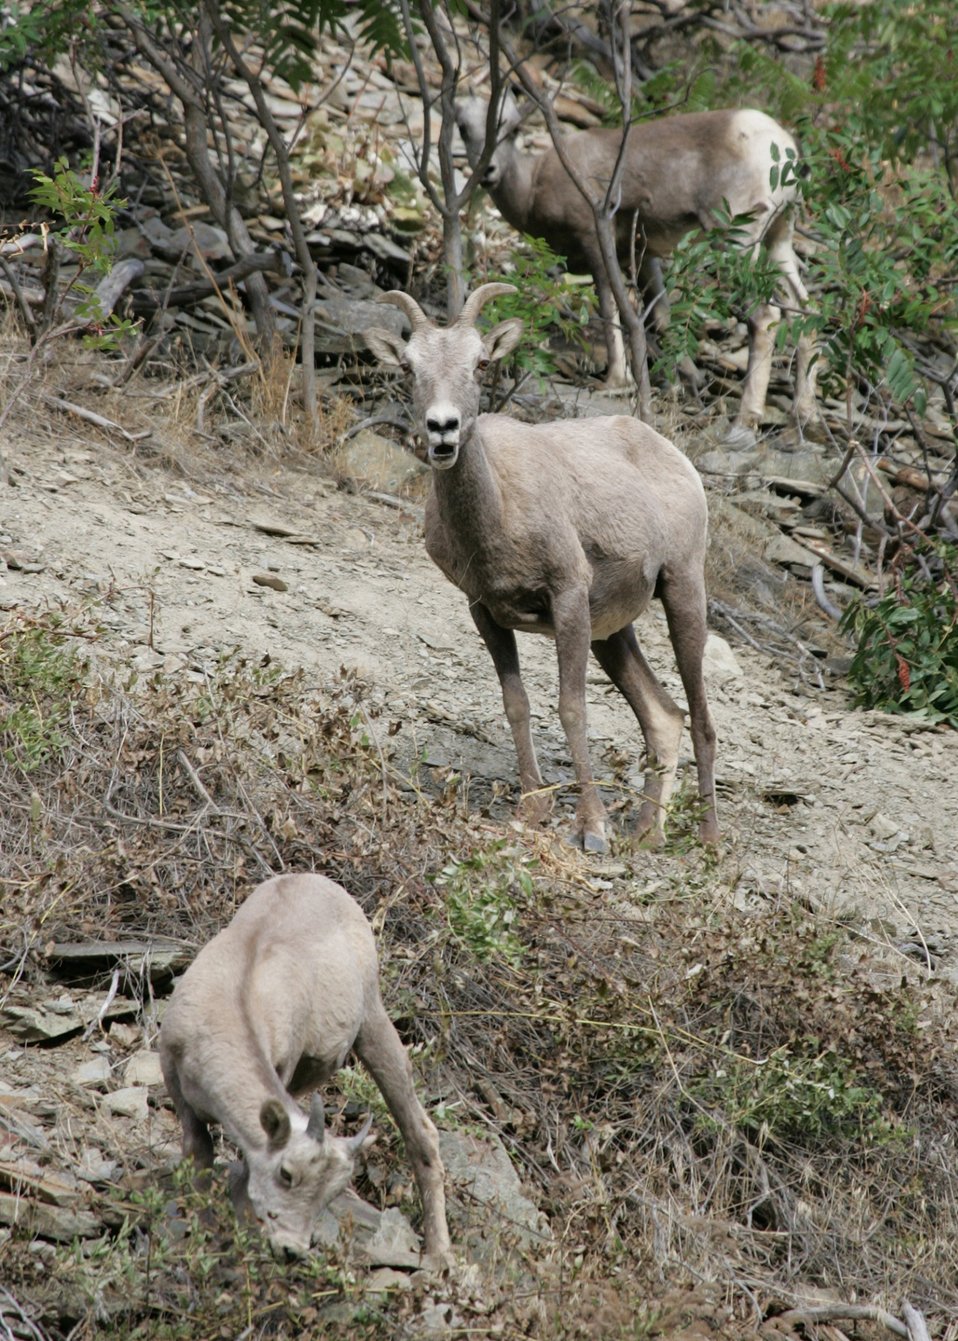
Bighorn sheep in the Connor Creek watershed in eastern Oregon.